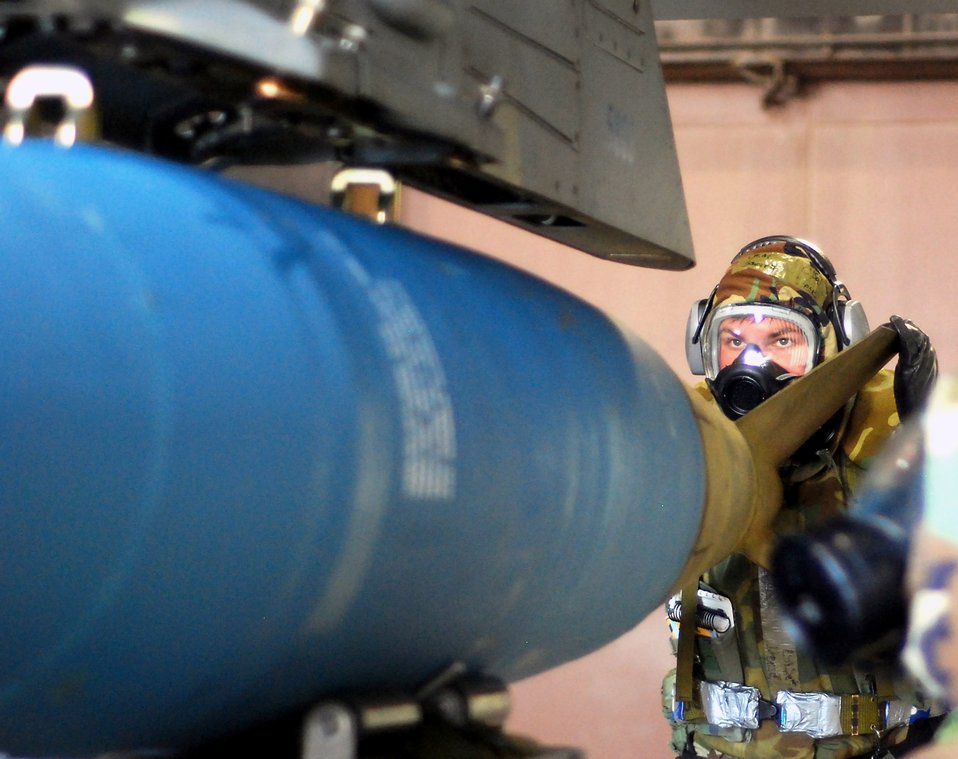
Testing readiness at Kunsan

Senior Airman Garrett Deese aligns bomb lugs for a MOPP 4 MK-84 load during the Peninsula Operational Readiness Exercise Nov. 8 at Kunsan Air Base, South Korea. The exercise was conducted to ensure base members remain ready to execute its mission. Airman Deese is an 8th Aircraft Maintenance Squadron weapons load crew member.